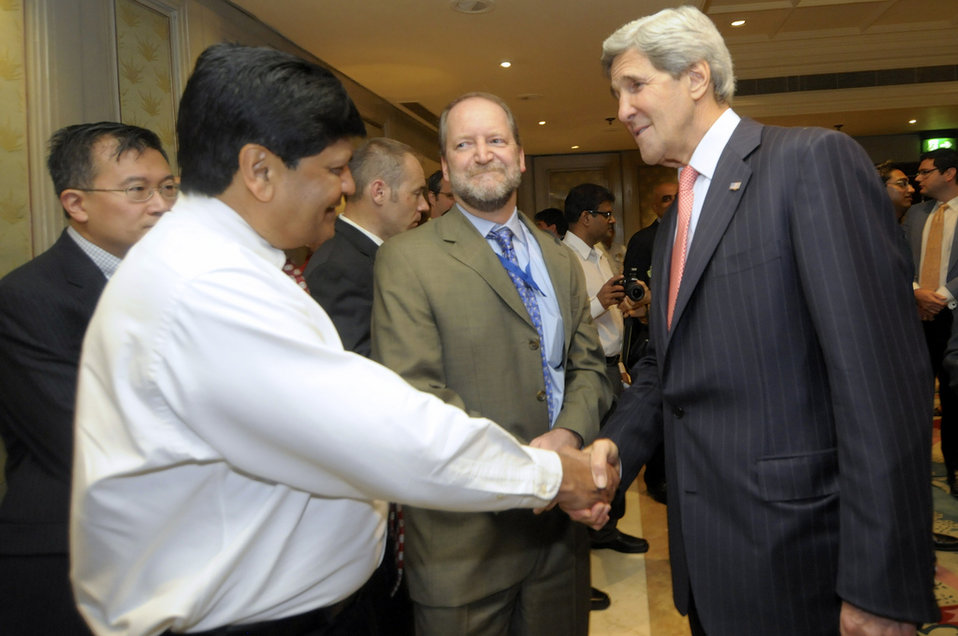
Secretary Kerry Greets Embassy New Delhi Staff

U.S. Secretary of State John Kerry greets Americans and local hires who work at the U.S. Embassy in New Delhi during a staff meet-and-greet on June 25, 2013.